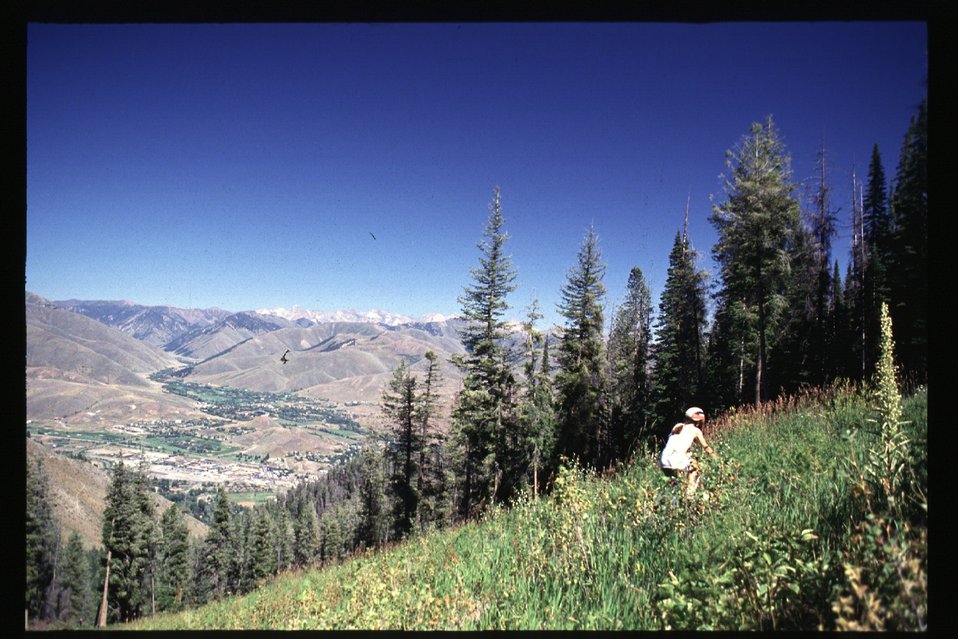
Recreation Scenic Biker Shoshone Field Office USRD Upper Snake River District